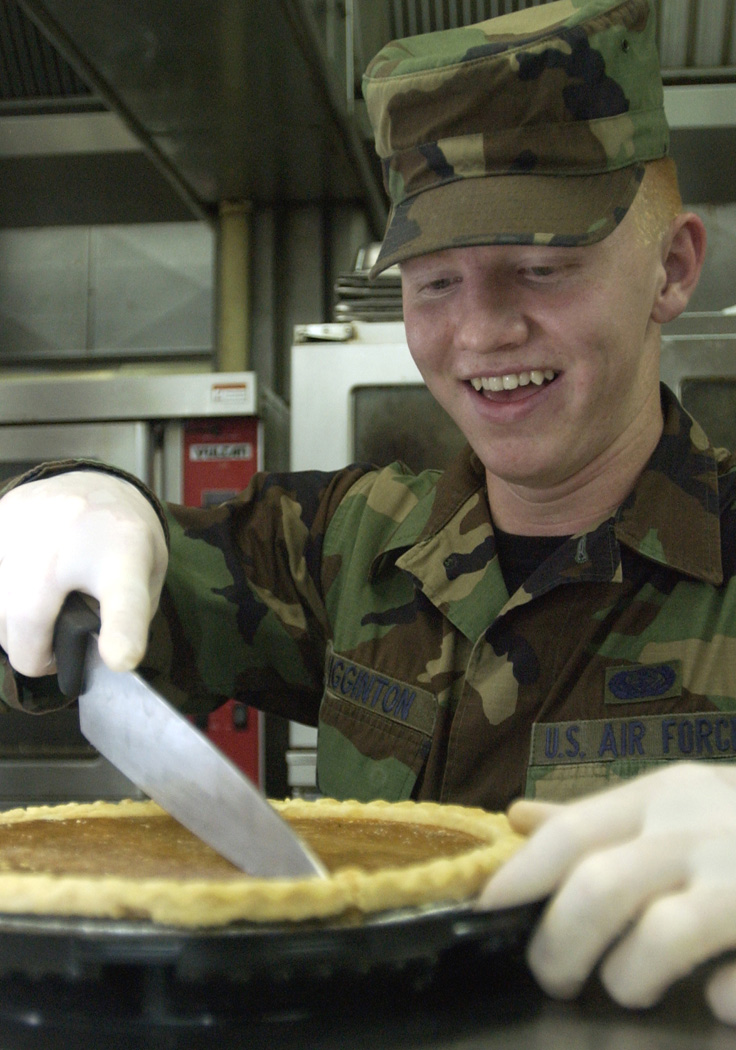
Festive preparations

ANDERSEN AIR FORCE BASE, Guam (AFPN) -- Airman Brandon Wigginton slices a pumpkin pie for the Thanksgiving festivities here. He is assigned to the 36th Service Squadron.